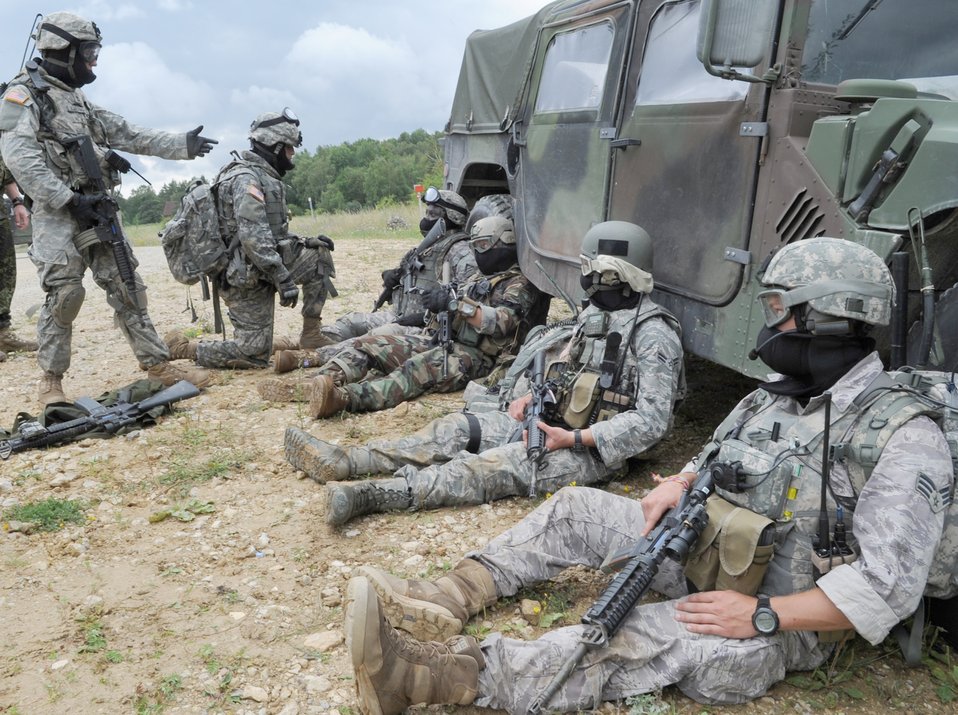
Close air support training

U.S. Air Force and Army members take a rest after an air assault mission scenario Aug. 3, 2010, during exercise Allied Strike 10 at Hohenfels, Germany.